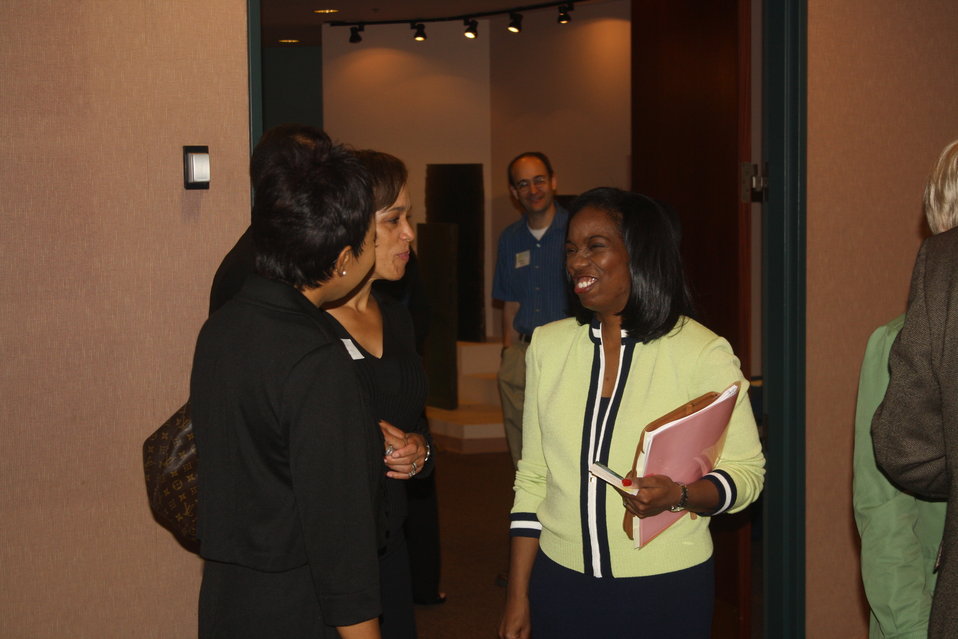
Faith-Based and Neighborhood Partnership launch at Atlanta's Carter Center